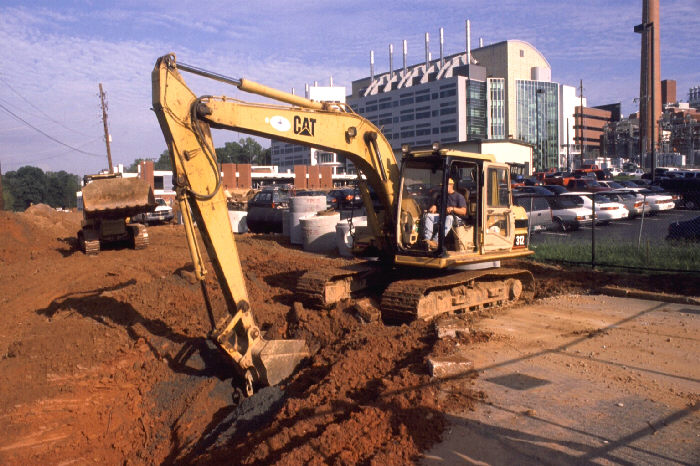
CDC Building 17, Roybal Campus.